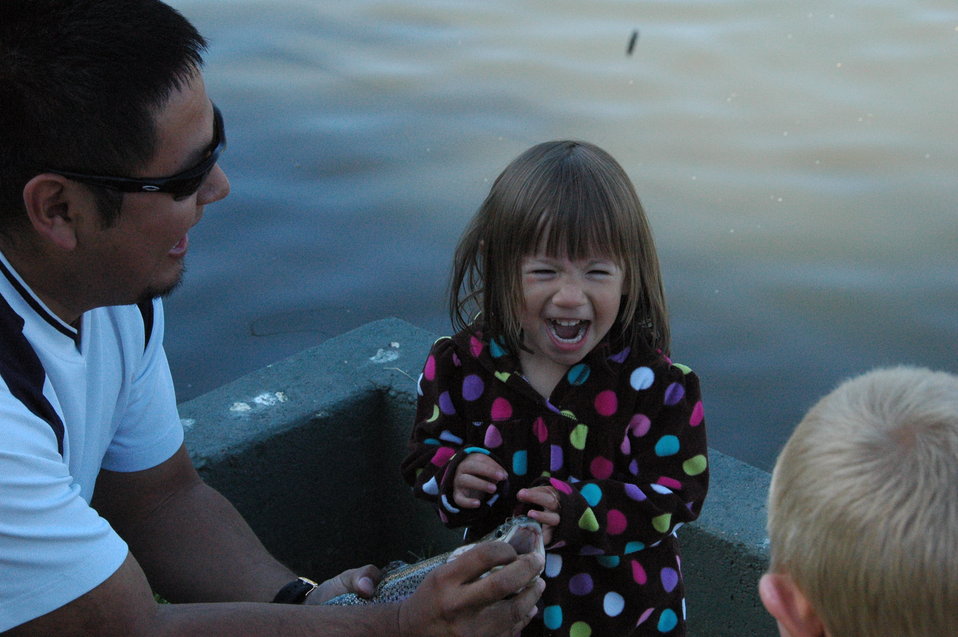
Overcome with Excitement

It was a beautiful spring day in Montana June 7, 2014, when an estimated crowd of 2,000 attended the Welling Up for Watershed Festival & Fishing Derby. Each year the event is held in conjunction with the Watershed Festival, which is organized by the Montana Outdoor Science School. Based on the number of rainbow trout caught, cleaned, and bagged, approximately 600 kids took part in the pond derby. The derby was highly successful thanks to Bozeman Fish Technology Center, Aquatic Animal Drug Approval Partnership, and Montana Fish & Wildlife Conservation Office staffers and volunteers. Many of the parents and children in attendance praised the event and expressed gratitude for the volunteers and organizations involved. One exuberant mother of two boys exclaimed: 'this event is a great example of what Bozeman is all about!' The largest fish caught weighed 7.5 pounds.